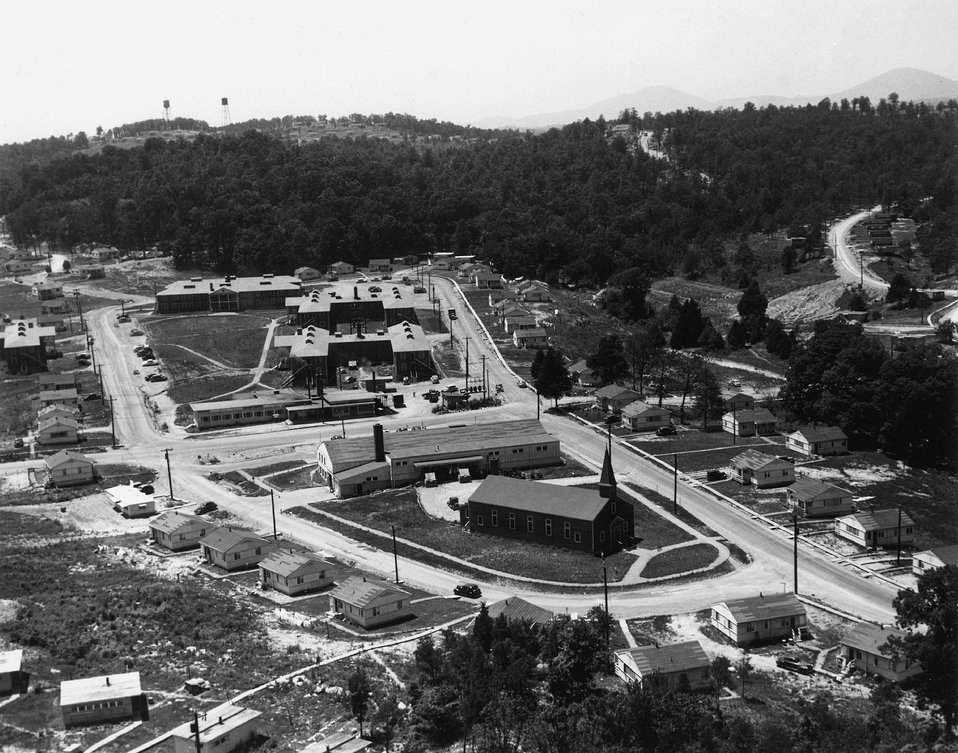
East Village area. c. 1945